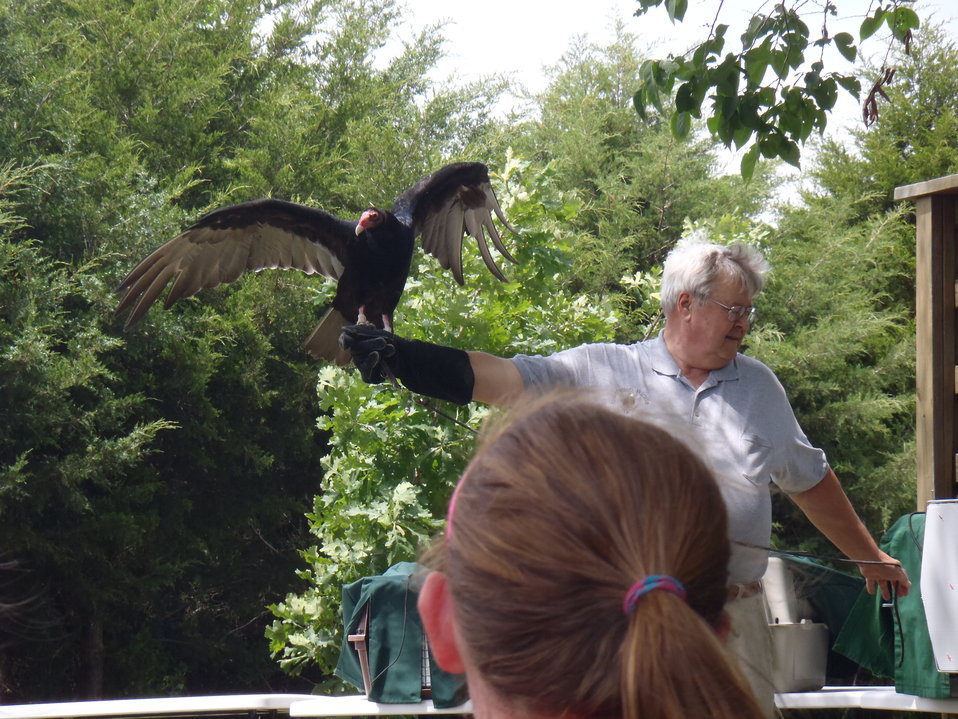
International Migratory Bird Day 2012

Marais des Cygnes National Wildlife Refuge with Operation Wildlife Presentation